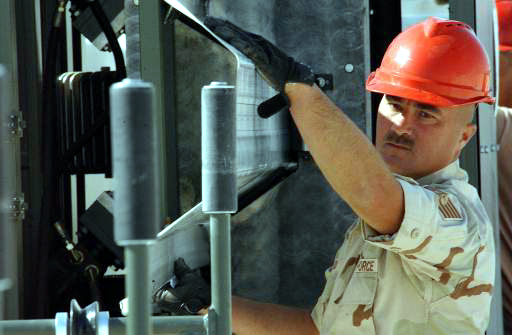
Building a boomtown

OPERATION ENDURING FREEDOM -- Tech. Sgt. John Deyo guides a panel through a machine being used to construct a new transportation building at Al Udeid Air Base, Qatar. Devo is a structural craftsman with the 819th/219th Expeditionary Red Horse Squadron. Squadron people are working 12-hours a day, six days a week to build numerous structures for the 379th Air Expeditionary Wing supporting Operation Enduring Freedom.